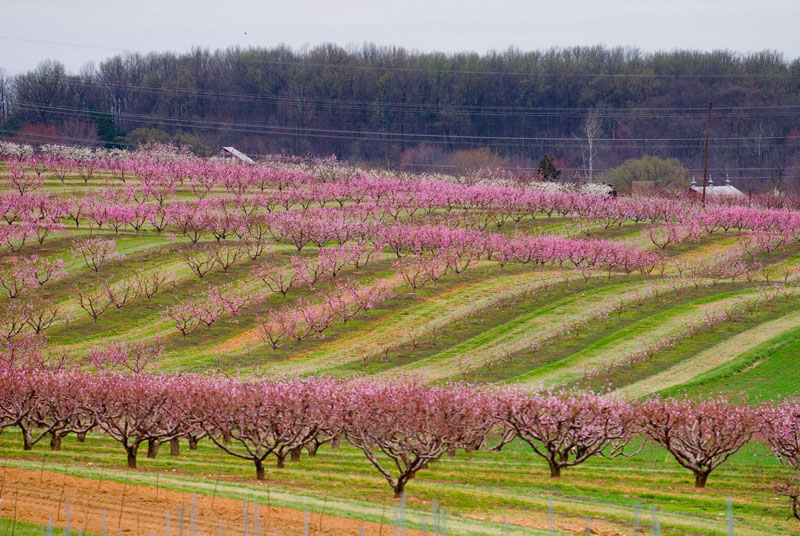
Apple orchard in spring bloom. Poolesville, MD, 2007 USEPA Photo by Eric Vance